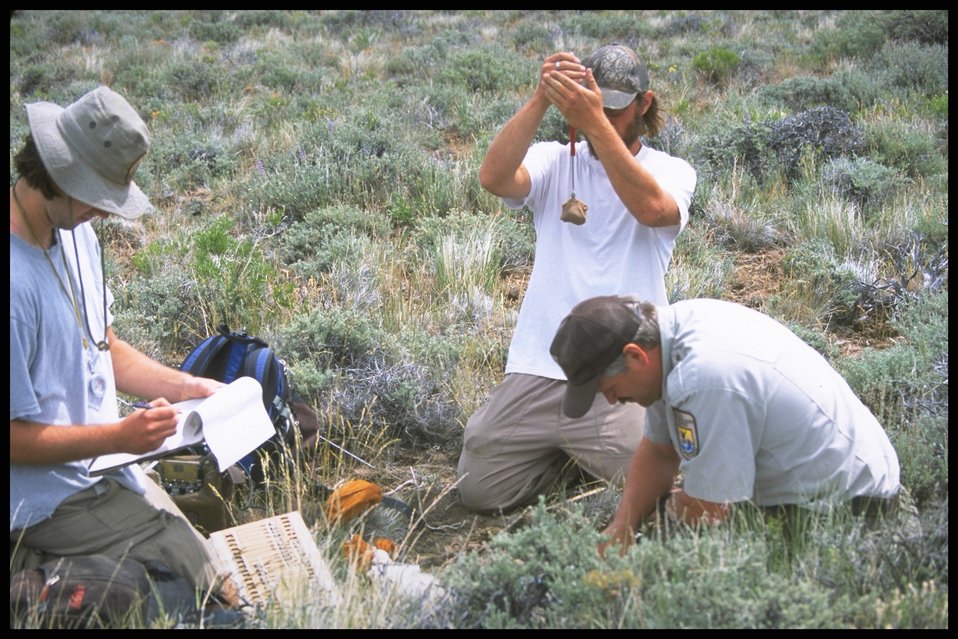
Sage Hen Crew, Lakeview District.